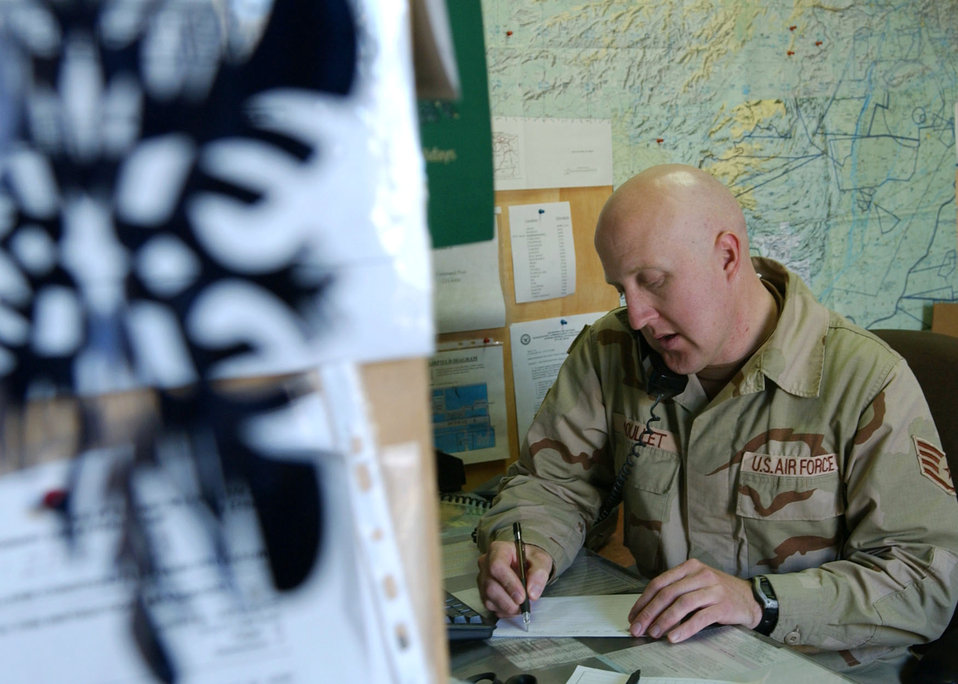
Combat weather team forecasts mission success

BAGRAM AIR BASE, Afghanistan -- Staff Sgt. Jim Moullet provides a weather update used for flight planning. Besides hourly forecasts, the 455th Air Expeditionary Wing's combat weather team reports local weather data to the Air Force Weather Agency. Sergeant Moullet is deployed from Ft. Polk, La.